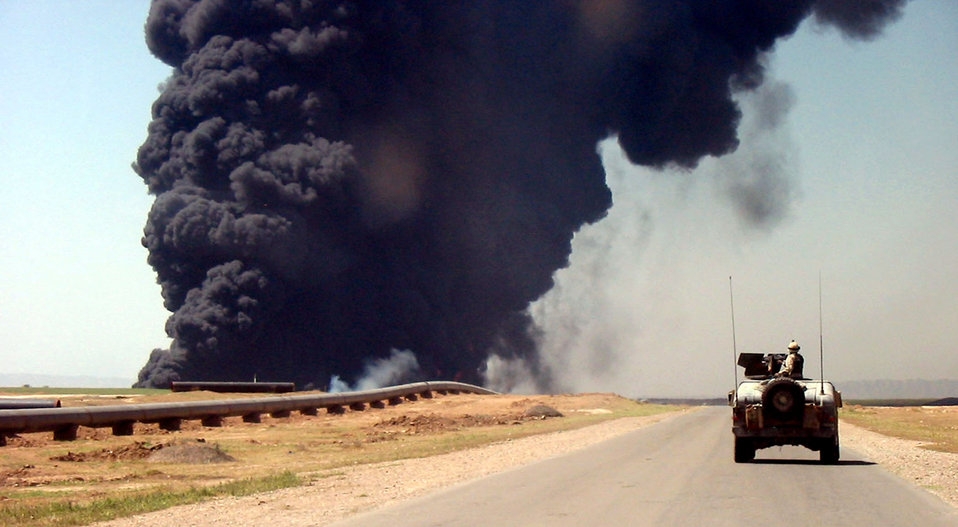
Explosion on the road

SOUTHWEST ASIA - A bomb explosion along a road is just one of the many hazards two explosive ordnance disposal technicians from Edwards Air Force Base, Calif., witnessed during a 90-day deployment.